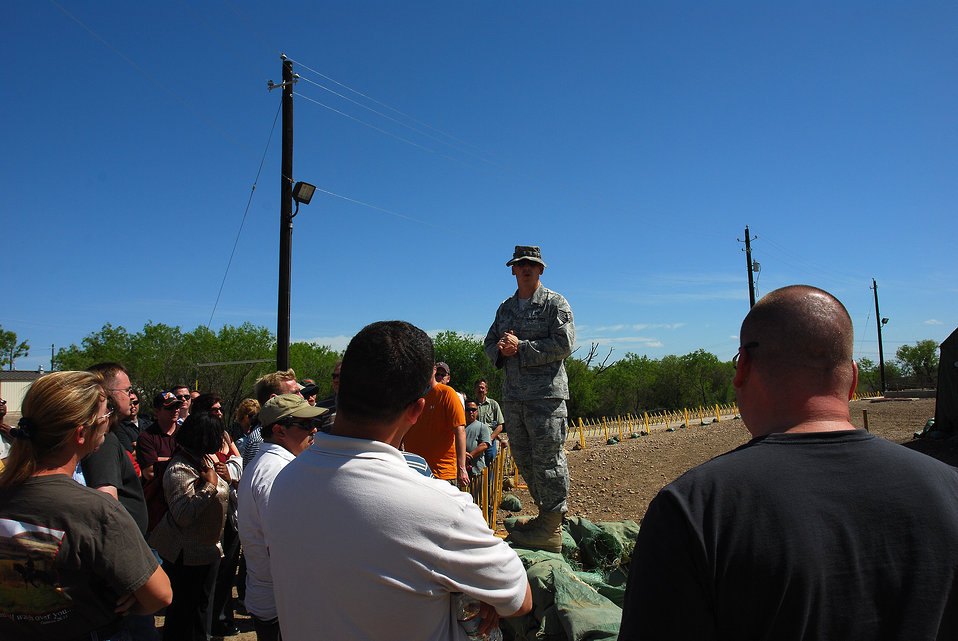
Retired airmen called back to duty

Retired Air Force majors and master sergeants take part in the 2009 Push-Pull exercise at Lackland Air Force Base, Texas. The exercise tested the ability of Air Force officials to recall retired Airmen with specific skills should their expertise be needed in the future.